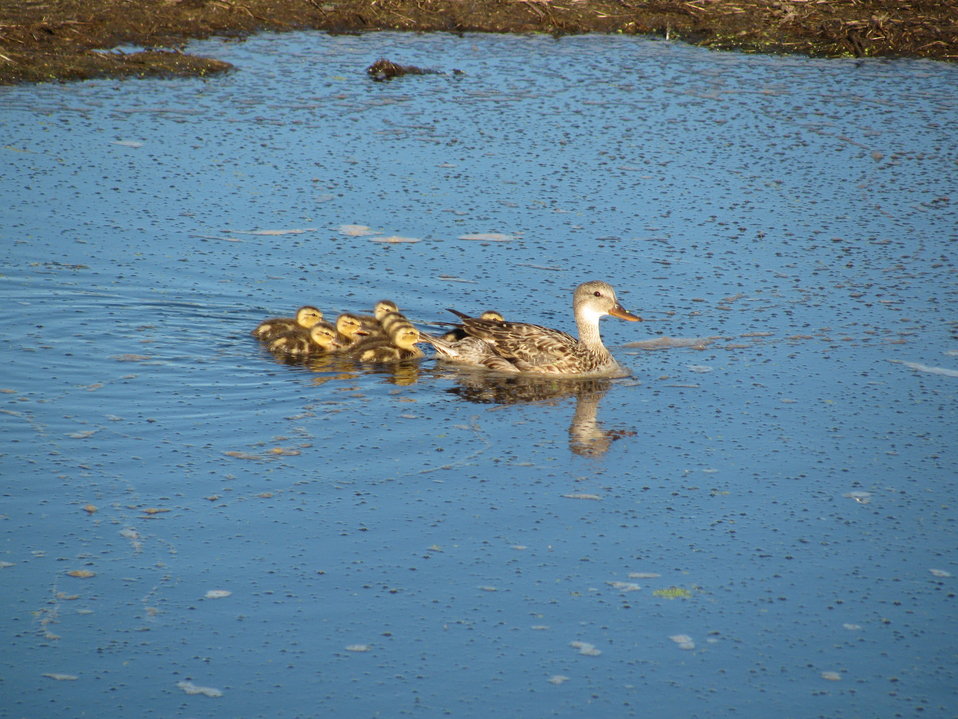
Gadwall Brood

This brood of gadwall has moved to the safety of a wetland. Wetlands like this provide food such as seeds, plants, and insects for the growing ducklings.